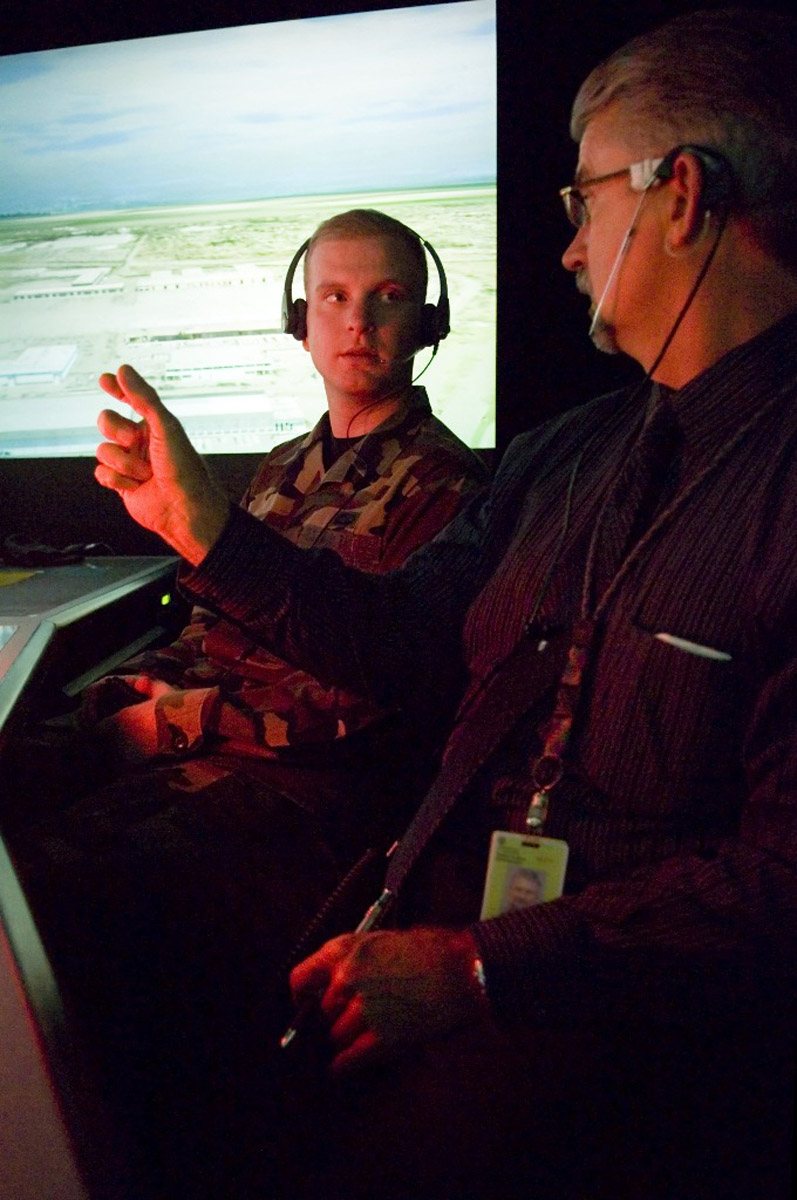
McChord Airmen help controllers train for new runway

Airman 1st Class Loren Cameron talks with Todd Thomas in the control tower simulator Nov. 6 at McChord Air Force Base, Wash. Airman Cameron is assigned to the 62nd Operations Support Squadron. Mr. Thomas is the Seattle-Tacoma International Airport frontline manager.